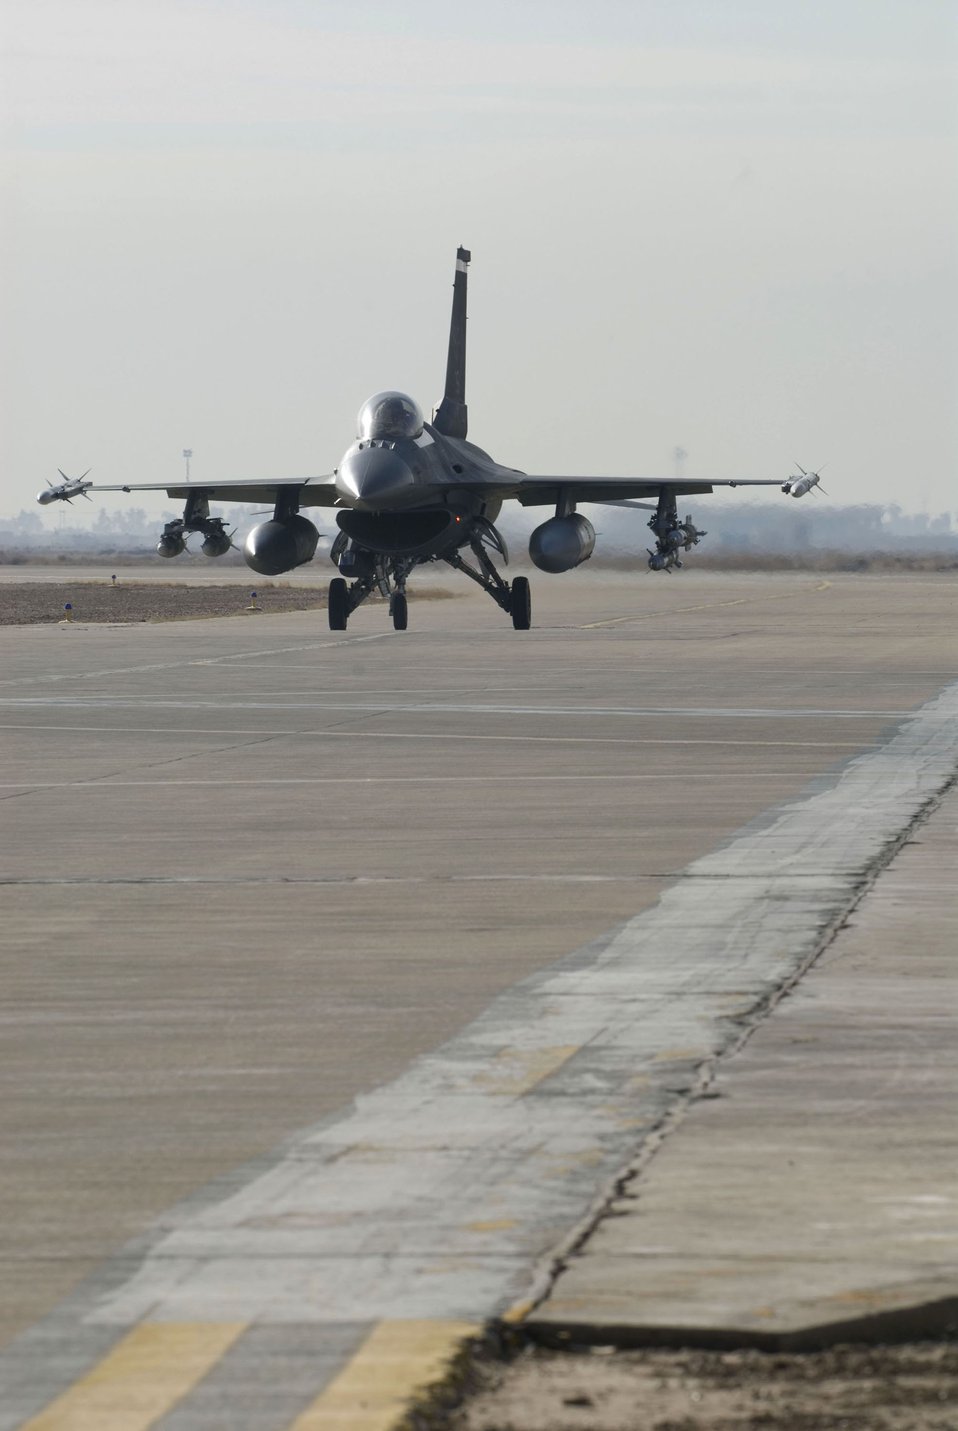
Airmen are 'bombarded'

An F-16 Fighting Falcon from the 22nd Expeditionary Fighter Squadron taxis from the runway to a secure area to disarm Jan. 19 at Balad Air Base, Iraq. Munitions are de-armed prior to returning to a hardened aircraft shelter to ensure the safety of ground personnel.